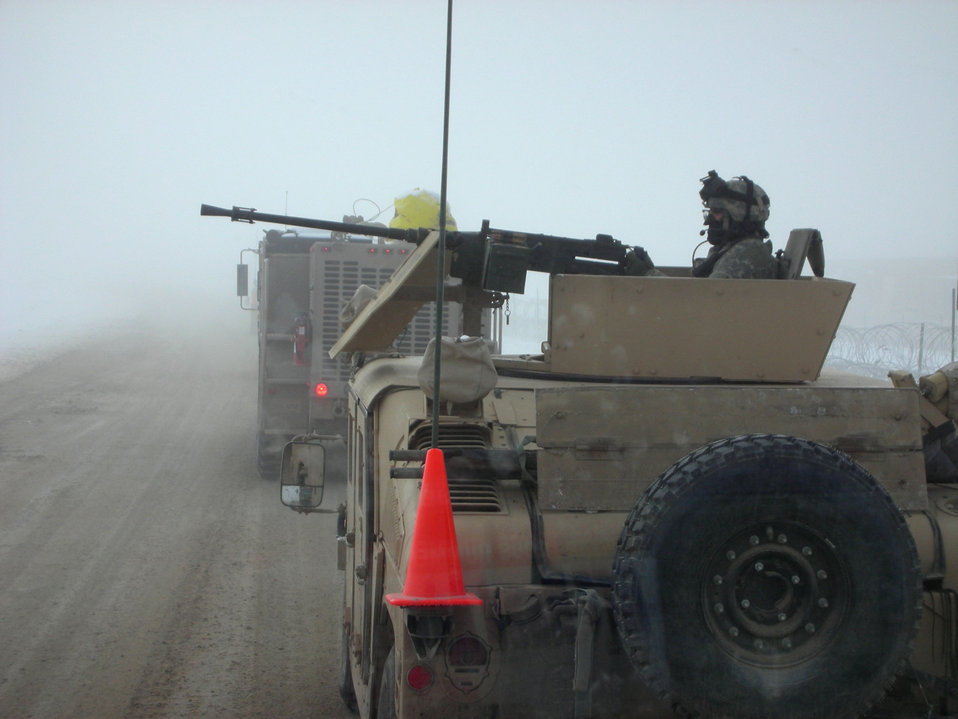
Flex Team deploys at moment's notice

An Army Humvee turret gunner guards a P-19 airport rescue firefighting vehicle operated by the 379th Expeditionary Civil Engineer Squadron Fire and Emergency Services Flex Team during an operation in Southwest Asia. Flex Team deploys at a moment's notice to forward-operating bases to provide aircraft rescue, emergency medical and firefighting support whenever and wherever needed.